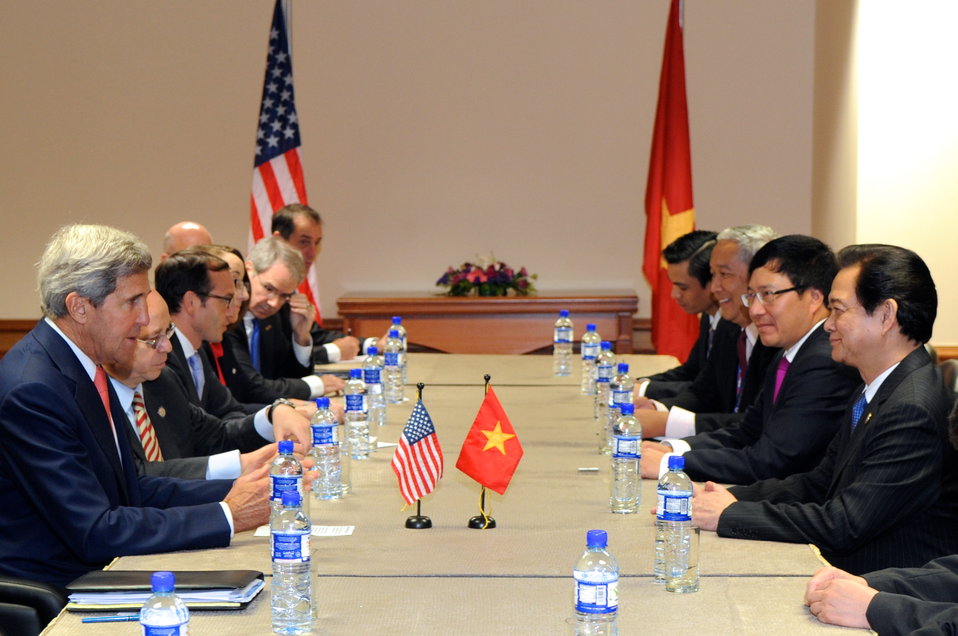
Secretary Kerry, Vietnamese Prime Minister Dung Hold Bilateral Discussion

U.S. Secretary of State John Kerry and Vietnamese Prime Minister Nguyen Tan Dung hold a bilateral meeting at the margins of the ASEAN Summit in Bandar Seri Begawan, Brunei, on October 10, 2013.